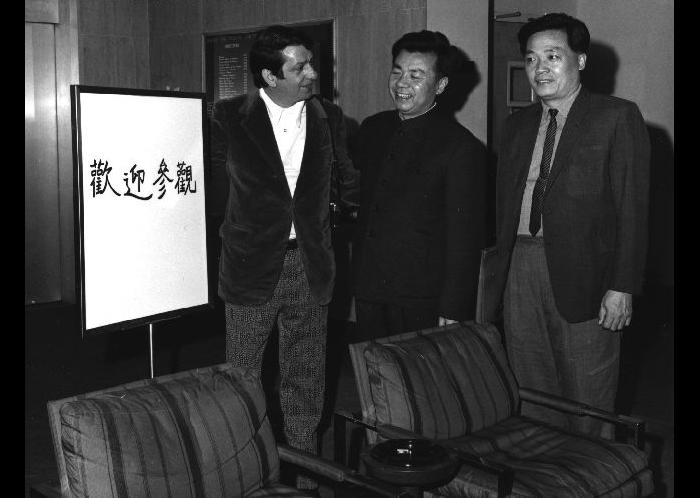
This 1973 image depicts three visiting newsmen from the People's Republic of China.